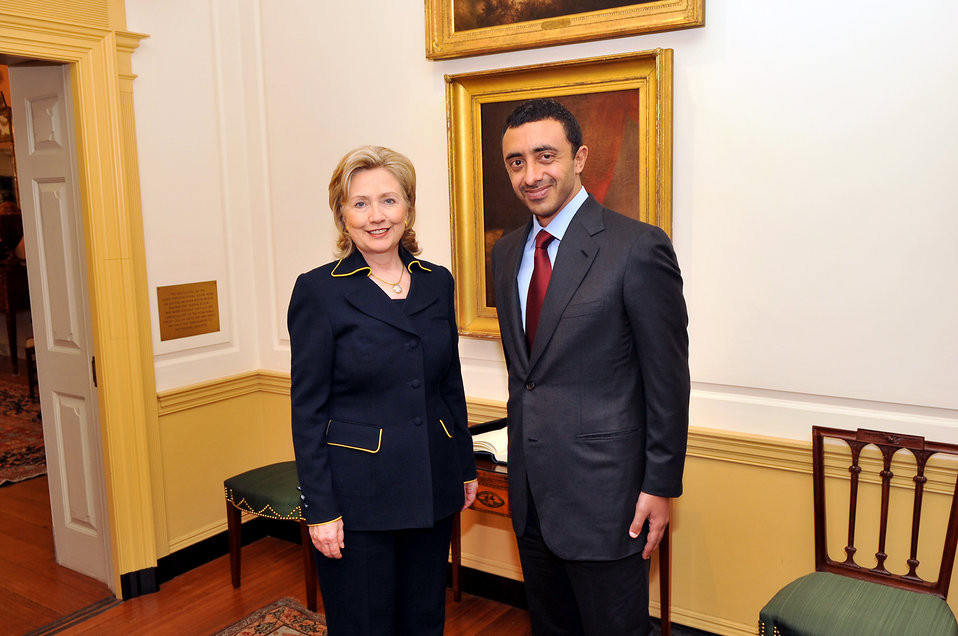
Secretary Clinton With United Arab Emirates Foreign Minister Abdullah bin Zayed al Nahyan

U.S. Secretary of State Hillary Rodham Clinton meets with United Arab Emirates Foreign Minister Abdullah bin Zayed al Nahyan at the State Department, Washington, DC February 23, 2010.